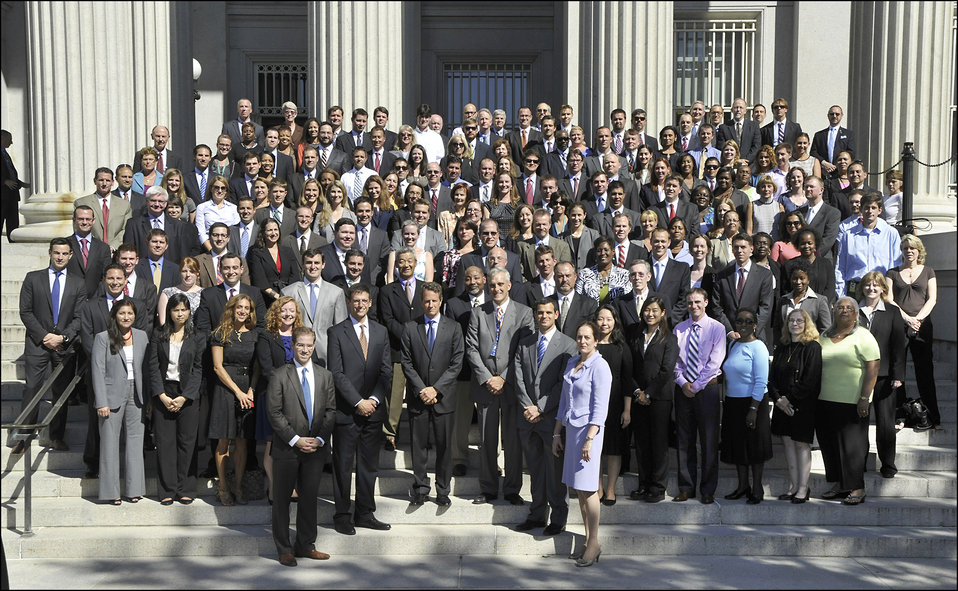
Office of Terrorism and Financial Intelligence

The Treasury Department's Office of Terrorism and Financial Intelligence gathered September 11, 2012 to be recognized for their work.